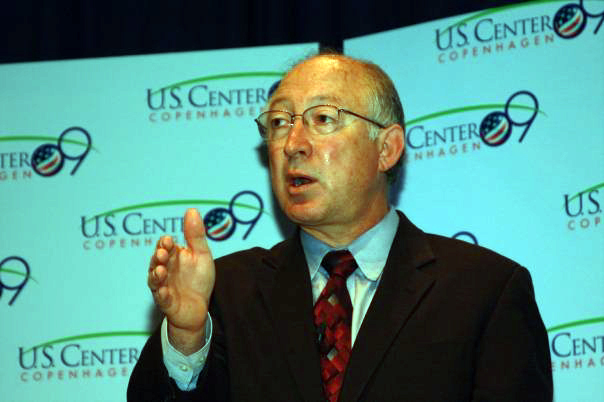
Presentation by U.S. Secretary of Interior

U.S. Secretary of the Interior Ken Salazar at the U.S. Center at COP15, Bella Center, Copenhagen, Denmark on December 11, 2009.